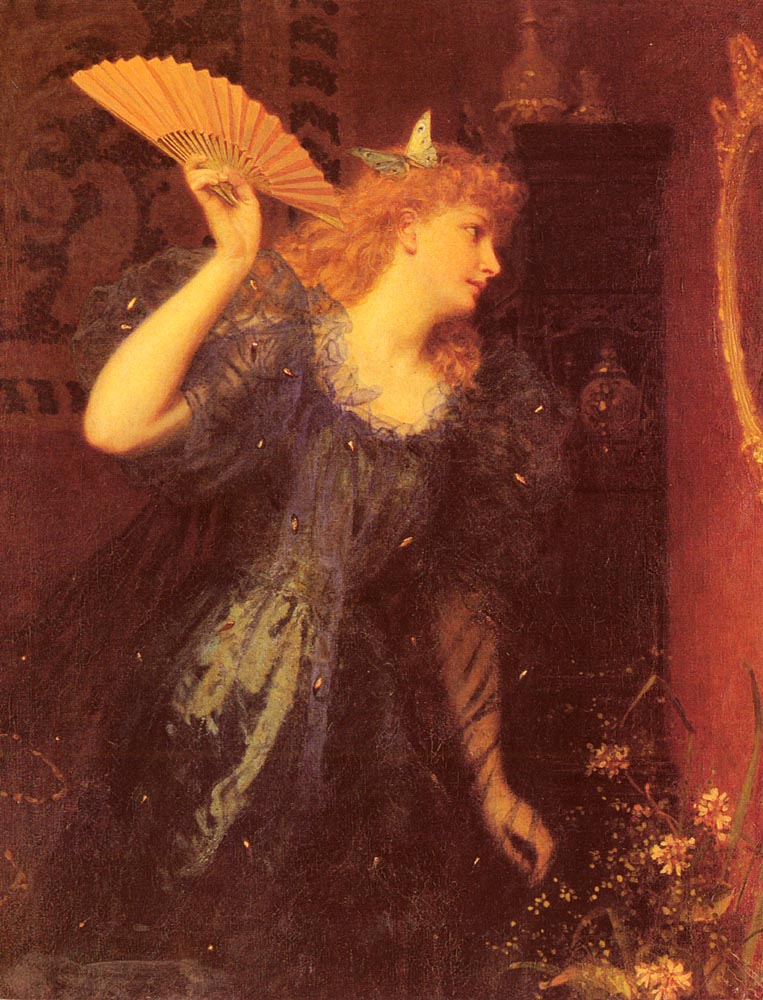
Anderson Sophie Ready For The Ball